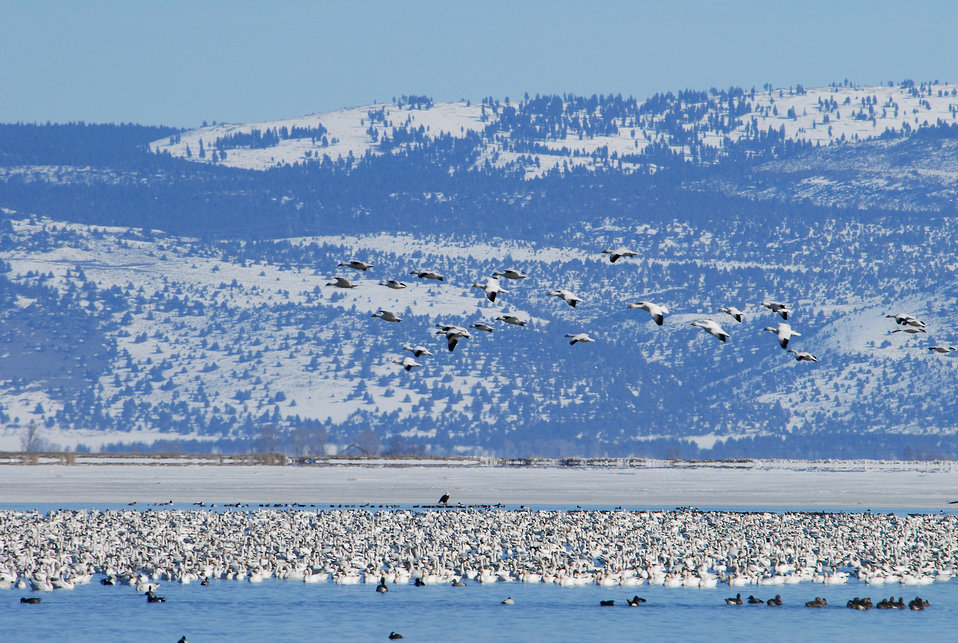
Snow Geese Migration